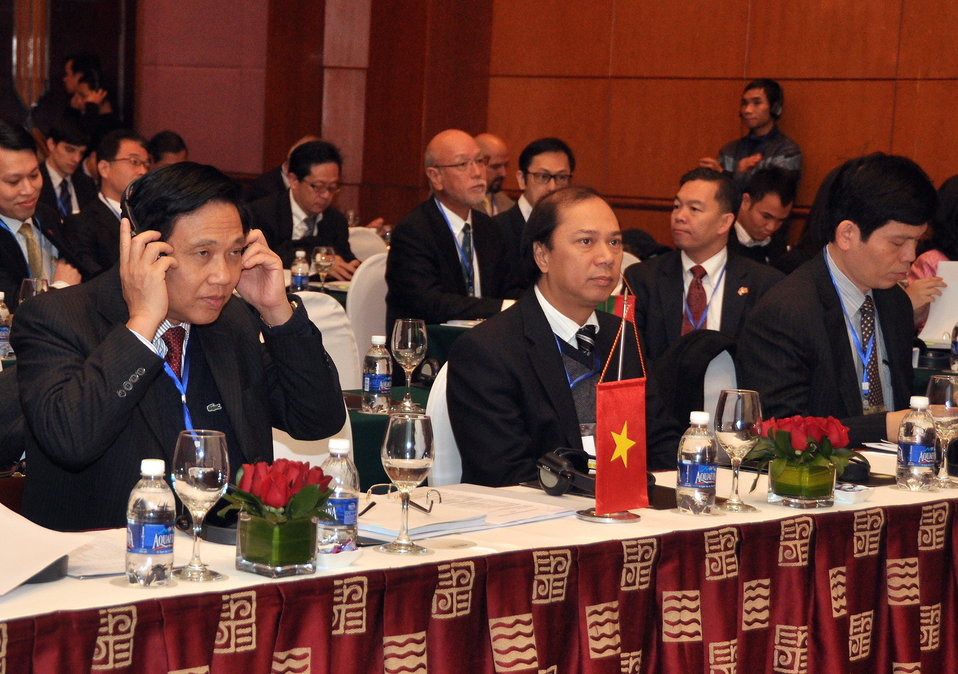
Vietnam's delegates to the LMI Infrastructure Best Practices Exchange

Hanoi: January 14, 2013